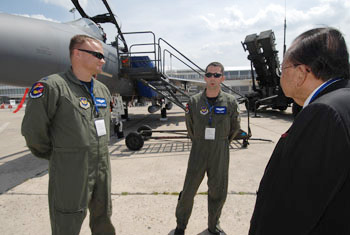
Secretary of the Air Force visit honors memorial and supports Paris Air Show

Capt. Darren Woodside (left), and Capt. Adam Court assigned to the 492nd Fighter Squadron, Royal Air Force Lakenheath, England, discuss the F-15E Strike Eagle jet fighter's combat capabilities with Senator Daniel K. Inouye of Hawaii at Le Bourget Airport, France. The F-15E is one of the several U.S. military aircraft exhibited June 15 to 20 at the Paris Air Show.